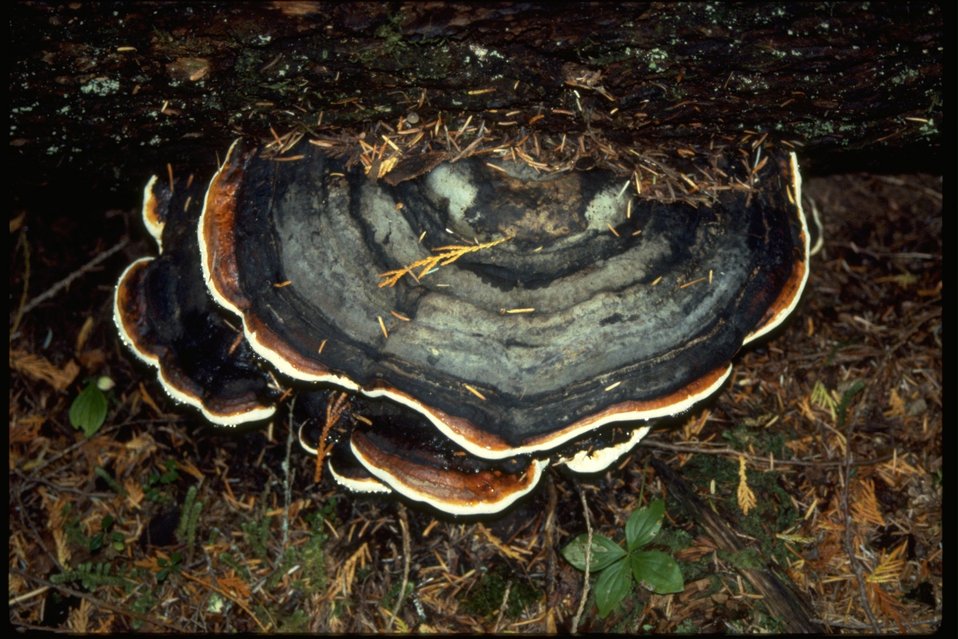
Cork